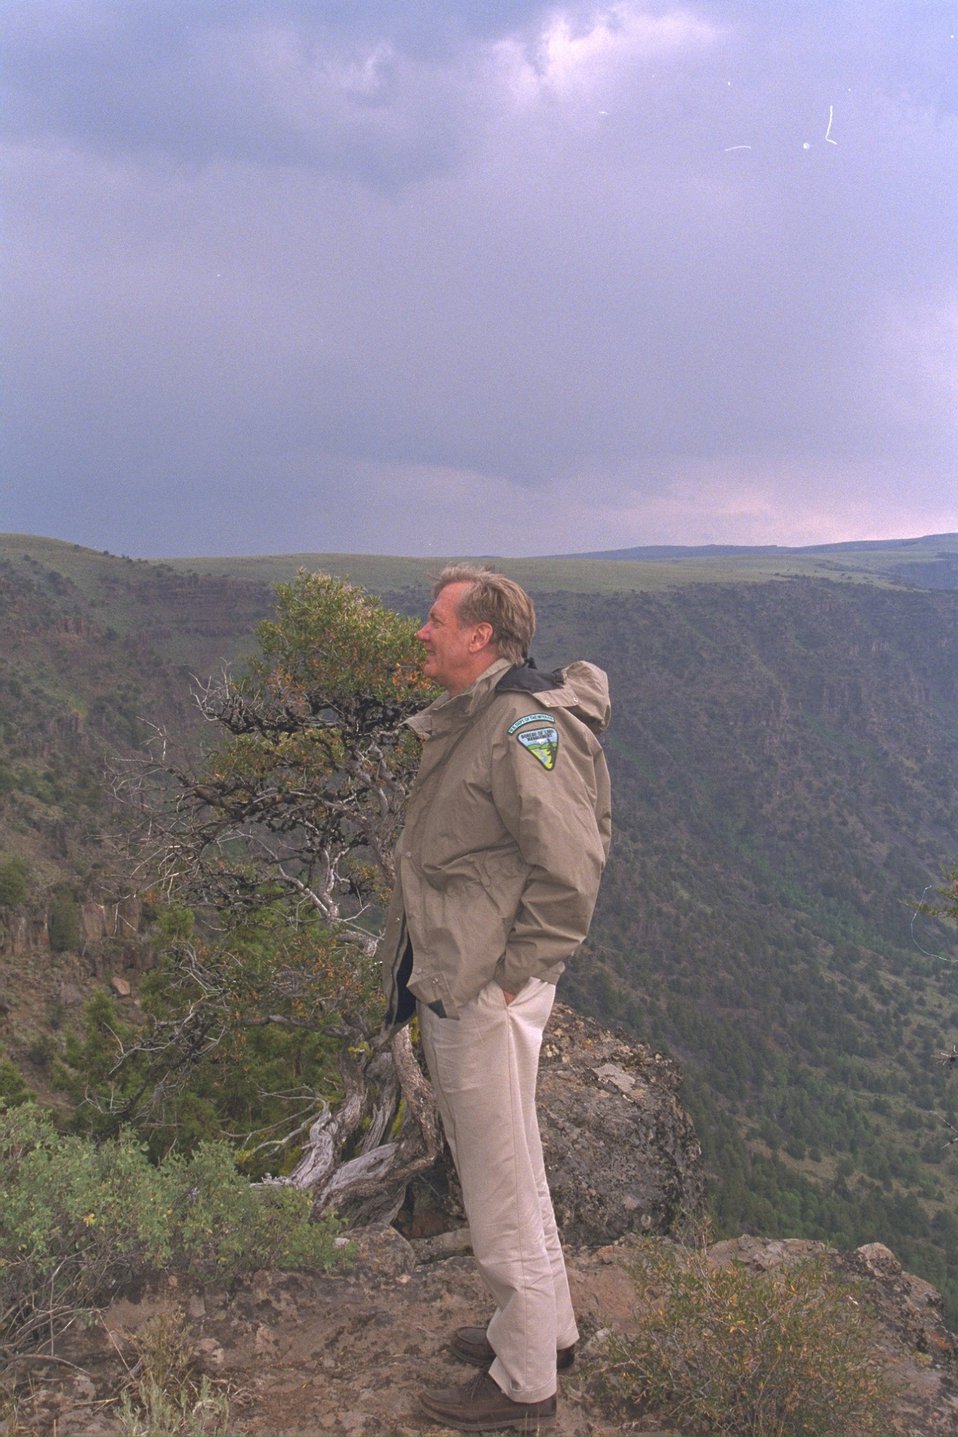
Secretary of the Interior, Bruce Babbitt, at Big Indian Gorge on Steens Mountain.